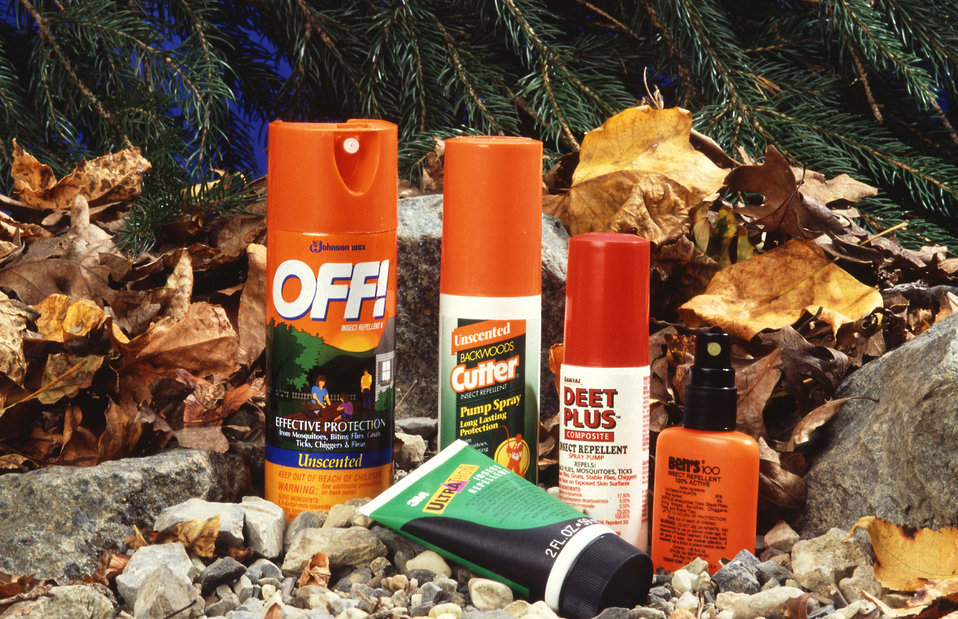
Mosquitoes are an outdoor nuisance to be avoided, as are biting flies, ticks, and chiggers. We ward all of them off with deet, a strong repellant that the U.S. Department of Agriculture (USDA) Agricultural Research Service (ARS) discovered 40 years ago.